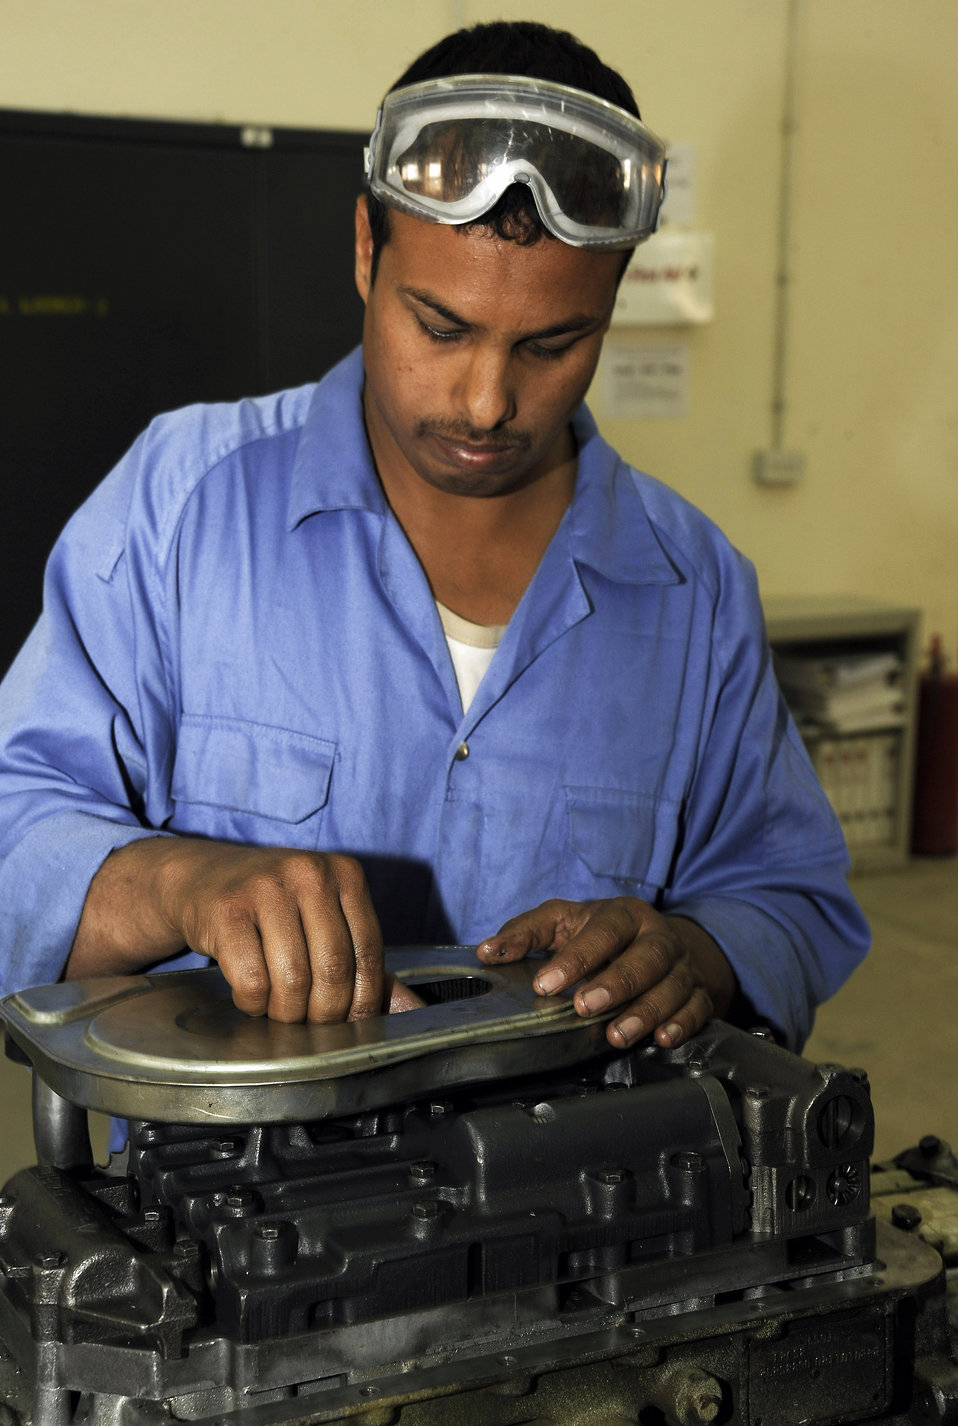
Airman tracks down parts for Iraqi maintenance depot

An Iraqi army member works on putting together the transmission for a M1114 HMMWV March 4 at Taji, Iraq. The transmission shop is one of many steps used to totally overhaul a new HMMWV at the Taji national maintenance depot for the Iraqi army.